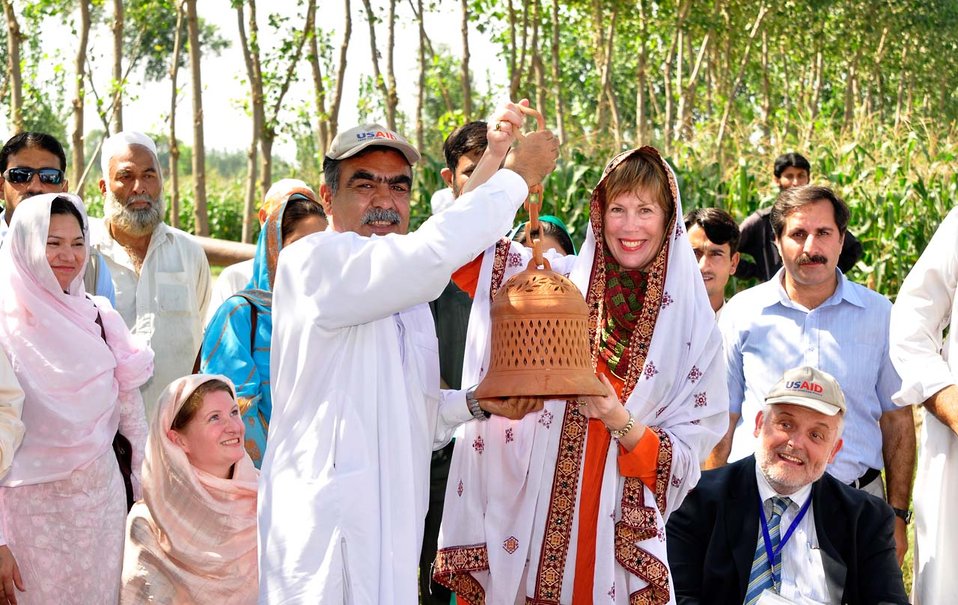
Dr. Marilyn Wyatt's Visit to the Flood-affected Farming Communities in Khyber Pakhtunkhwa